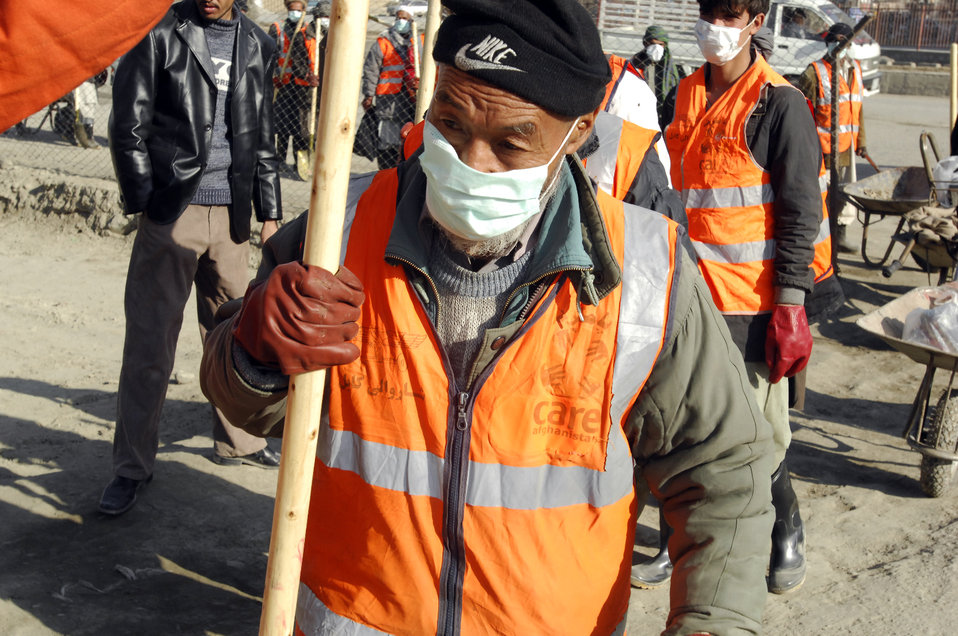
Care68